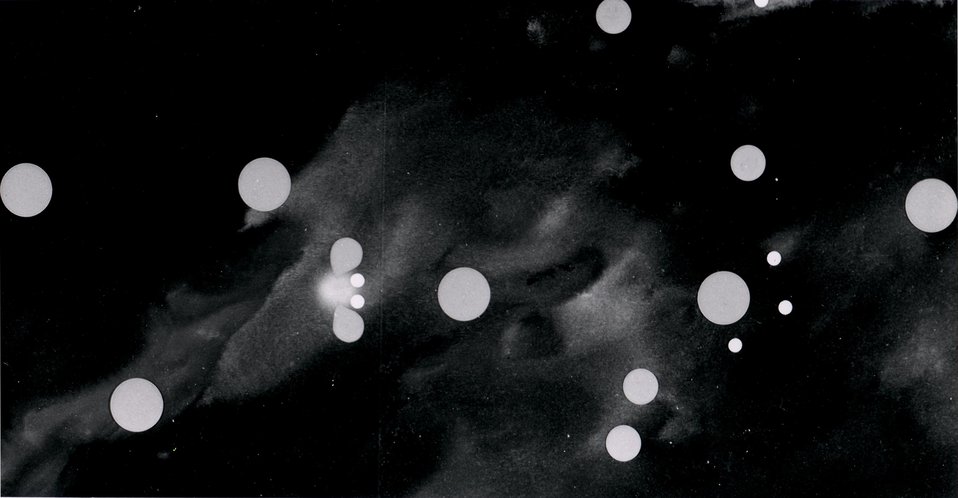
Artist's conception of isotopic energy release. c. 1962